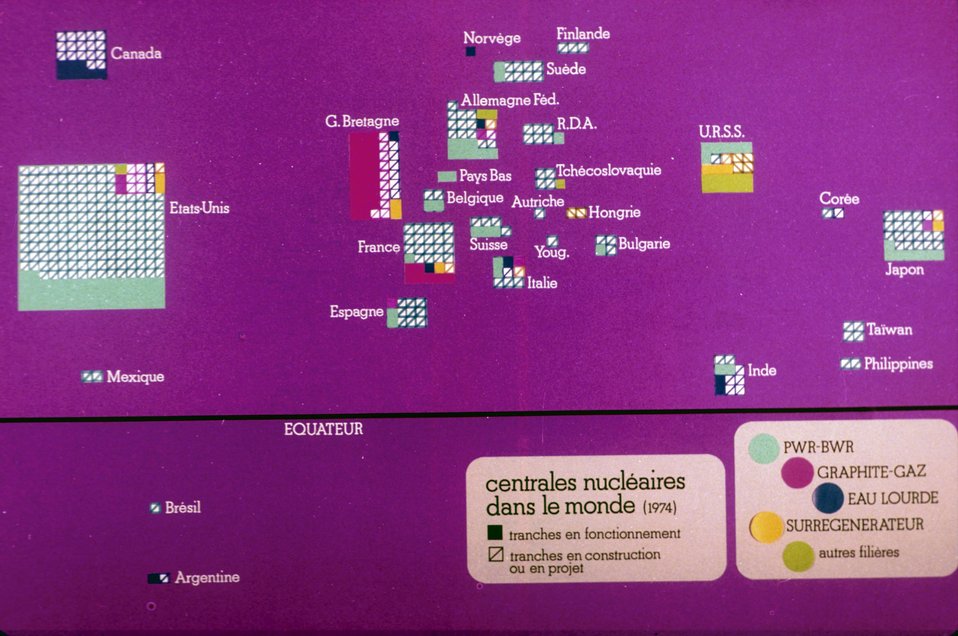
Les centrales nuclÐaires dans le monde.